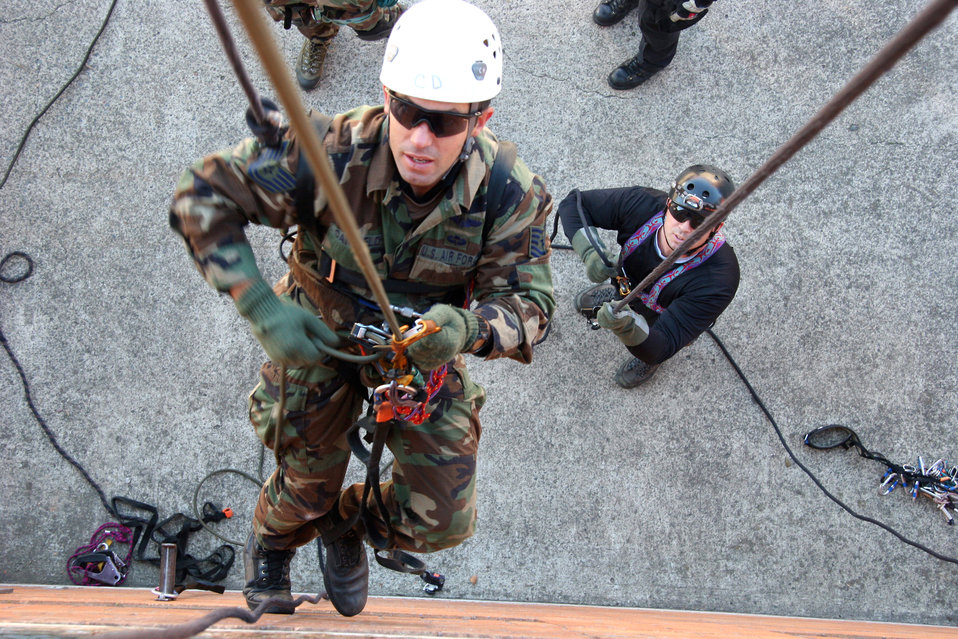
Rescuers learn to make order out of chaos

Tech. Sgt. Andrew Canfield ascends the fire department training tower in Vancouver, Wash., during a certification course Oct. 21 at Portland Air National Guard Base, Ore. Sergeant Canfield is a pararescueman with the 304th Rescue Squadron from the Portland ANGB.